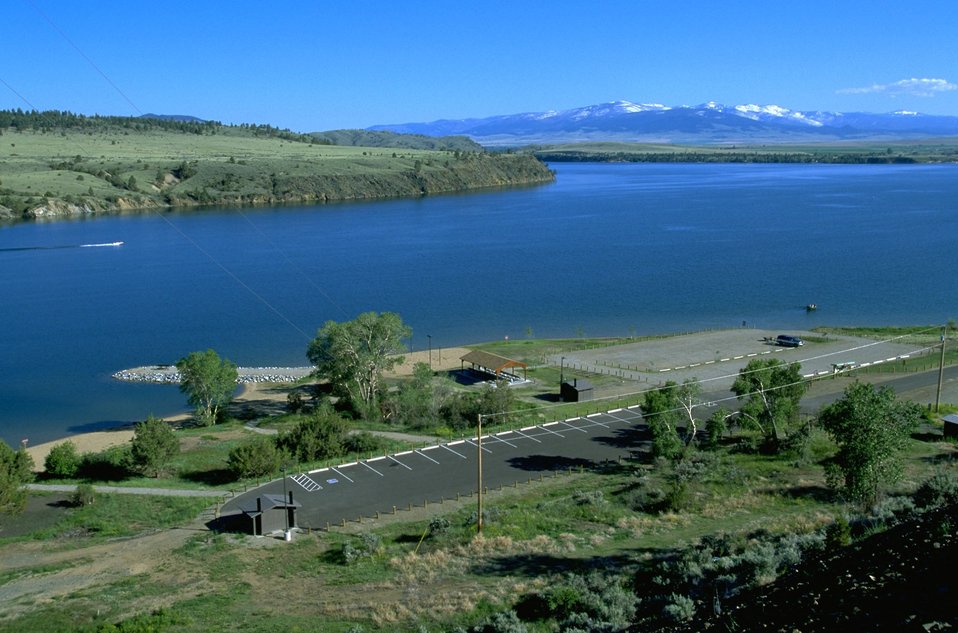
Looking down on Clark's Fork Day Use Area